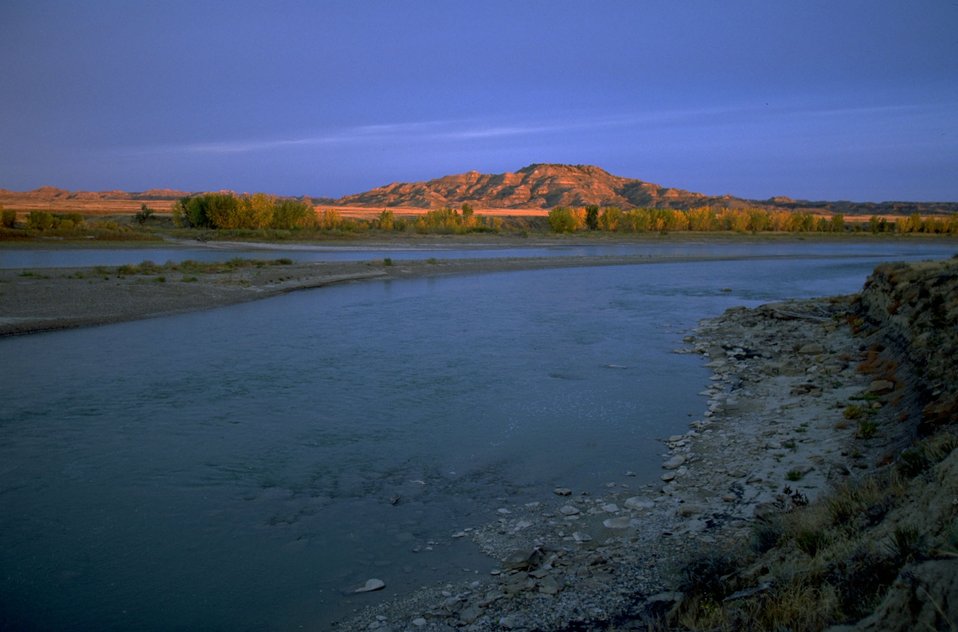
Sheridan Butte in the Terry Badlands Wilderness Study Area